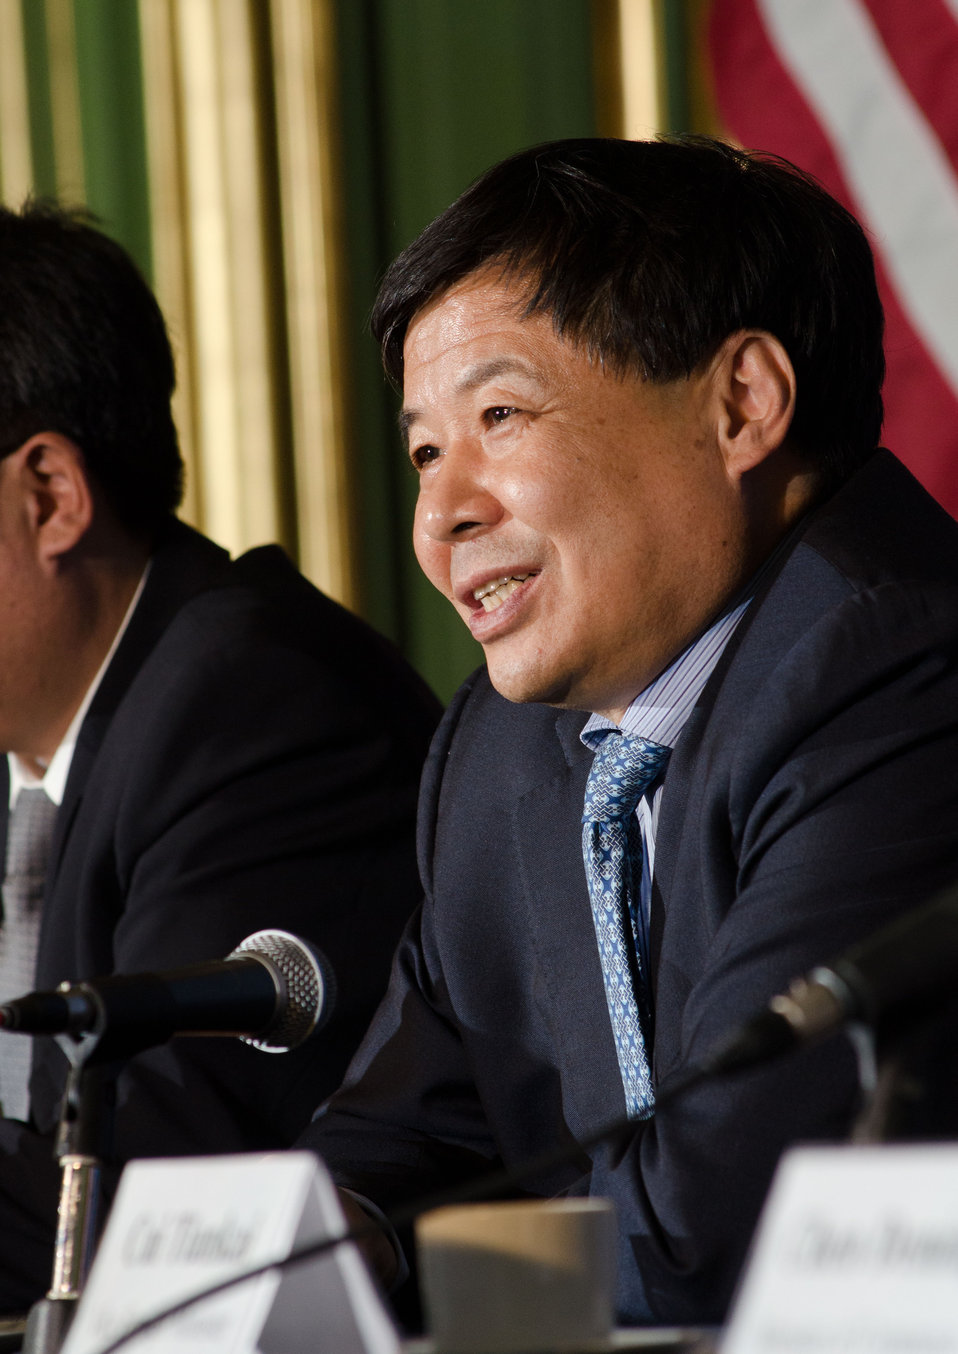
China’s Vice Minister of Finance Zhu Guangyao answers a question from international news media journalists at the 23rd Session of the U.S. China Joint Commission on Commerce and Trade (JCCT) press conference at the Andrew W. Mellon Auditorium in Washington, D.C. on Wednesday, Dec. 19, 2012. The JCCT holds high-level plenary meetings on an annual basis to review progress made by working groups that focus on a wide variety of trade issues. These working groups meet throughout the year to address topics such as intellectual property rights, agriculture, pharmaceuticals and medical devices, information technology, tourism, commercial law, environment, and statistics.